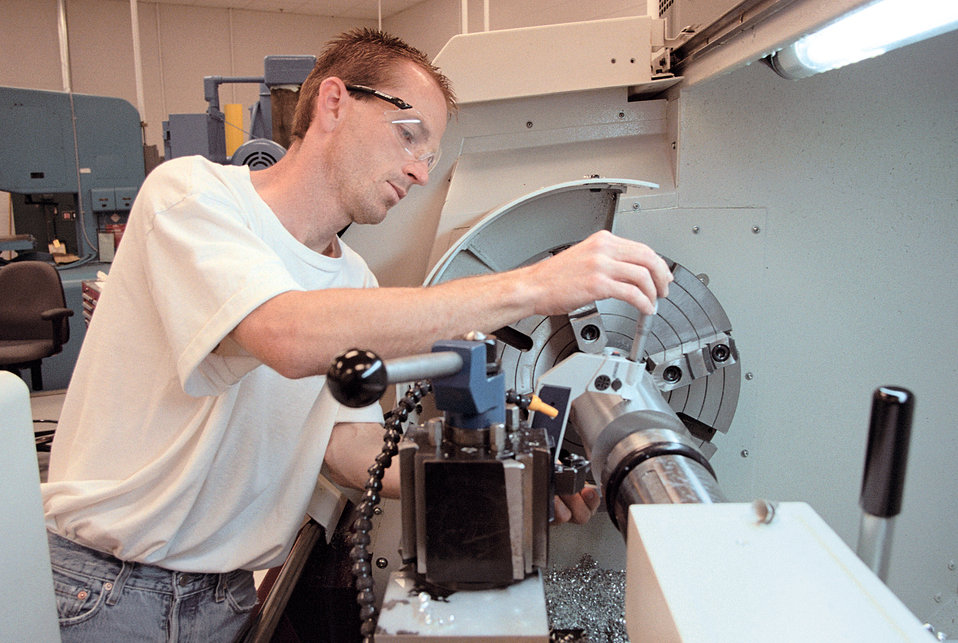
IDEA Man

TINKER AIR FORCE BASE, Okla. -- Timothy Case cuts an aluminum sleeve for a turbine housing from a T-38 Talon aircraft. Case, a worker in the Oklahoma City Air Logistics Center's aircraft accessories branch here, won $10,000 for his sleeve manufacturing idea.